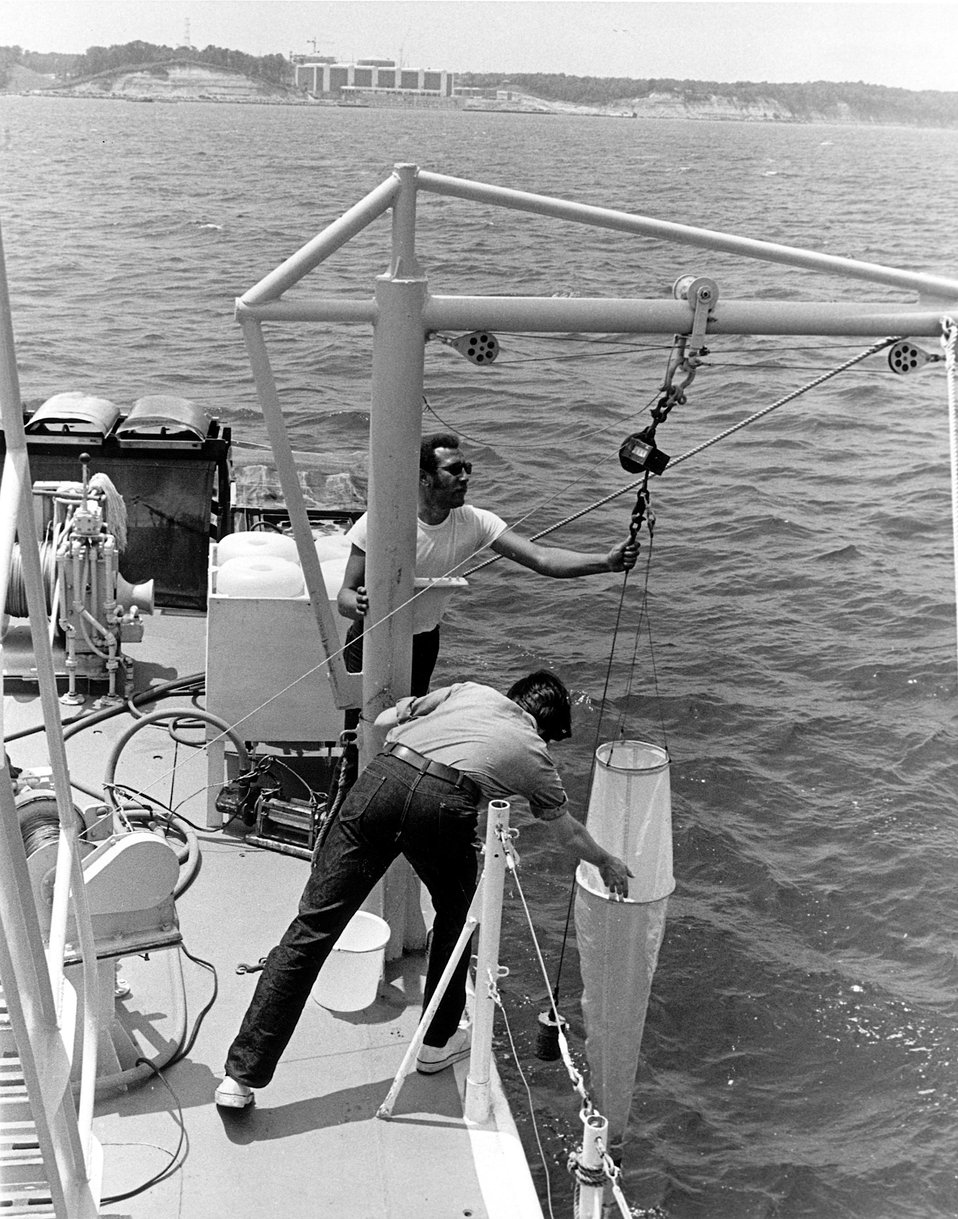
A research team from the Johns Hopkins University prepares to lower a plankton net from the deck of the research vessel Ridgely Warfield to sample the amount and variety of plankton in the Chesapeake Bay. Circa 1972.